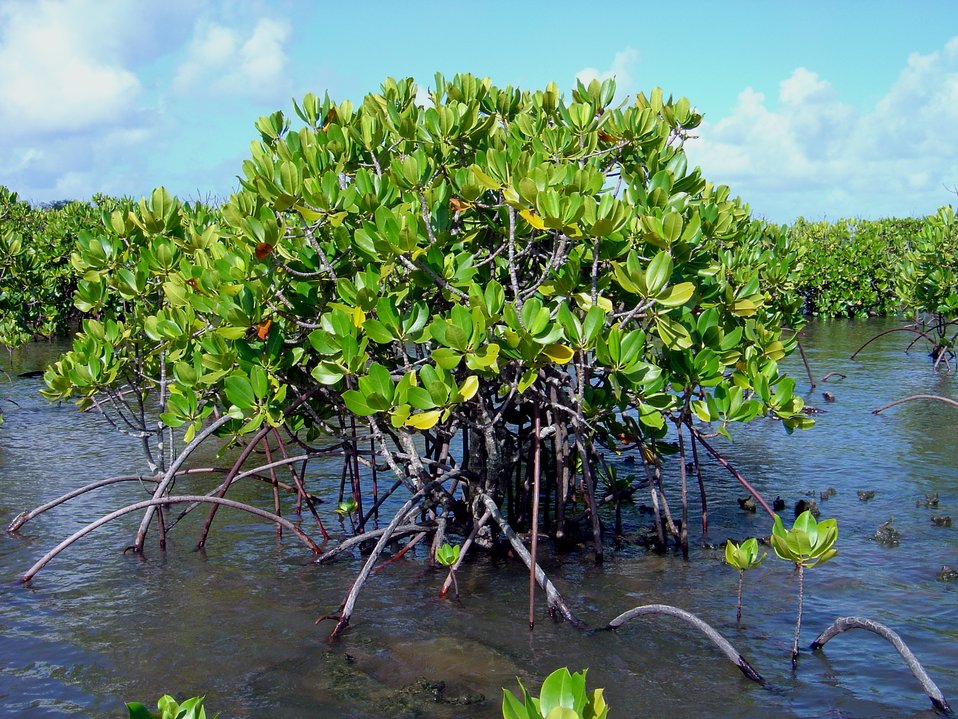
Mangroves growing in the coral rocks of the Guam coastline.